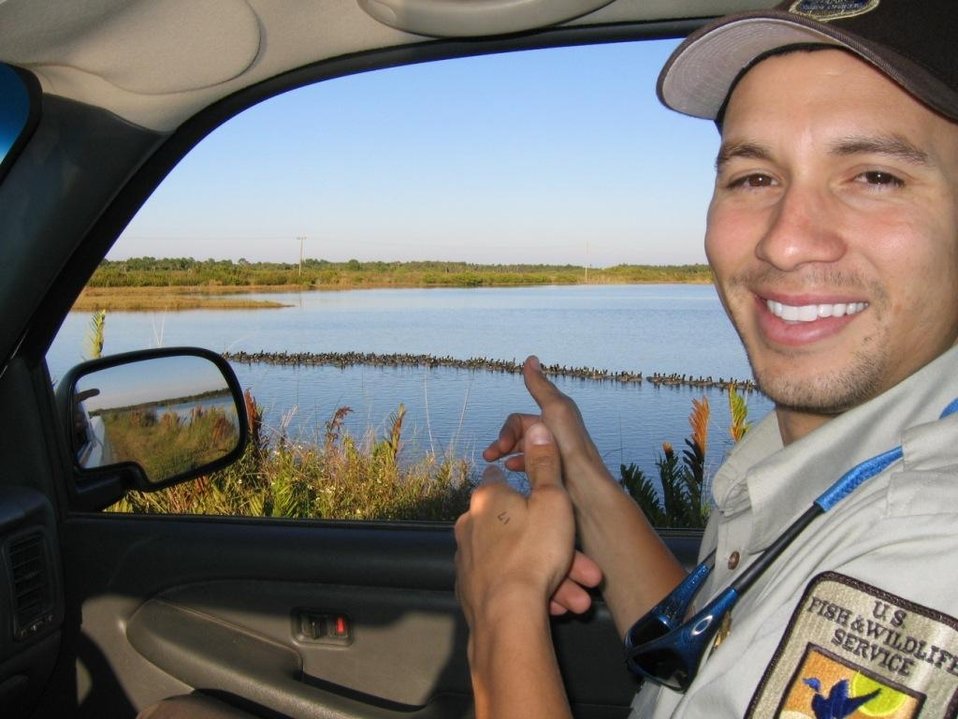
Jimmy Laurent tours Merritt Island National Wildlife Refuge in Florida, where he was assistant refuge manager until 2008. Today, Laurent is s a collateral duty law enforcement officer as well as refuge manager at Anahauc National Wildlife Refuge in Texas. (USFWS)